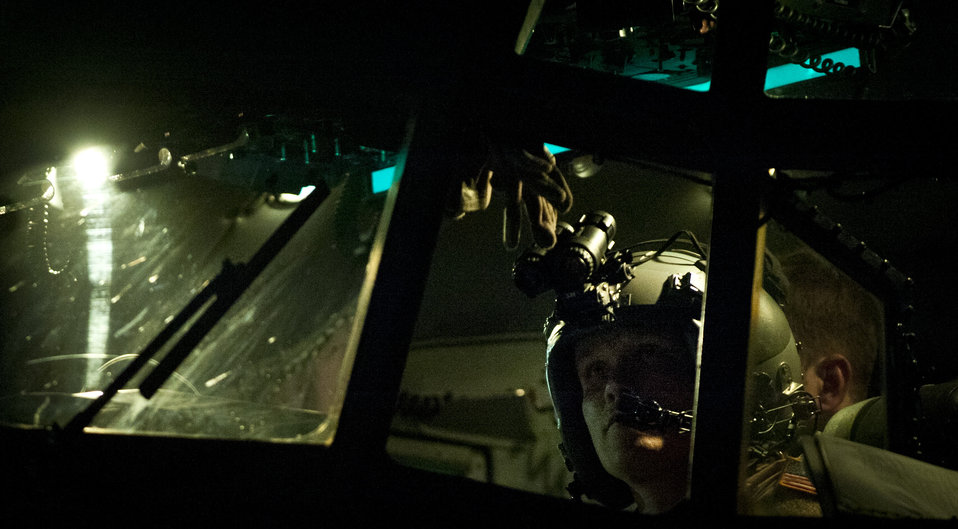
Hercules: A day in the life

Capt. Andy Chapman conducts a preflight check in his C-130H Hercules before a night flight at Bagram Airfield, Afghanistan, June 2, 2012. Chapman is a pilot with the 774th Expeditionary Airlift Squadron,